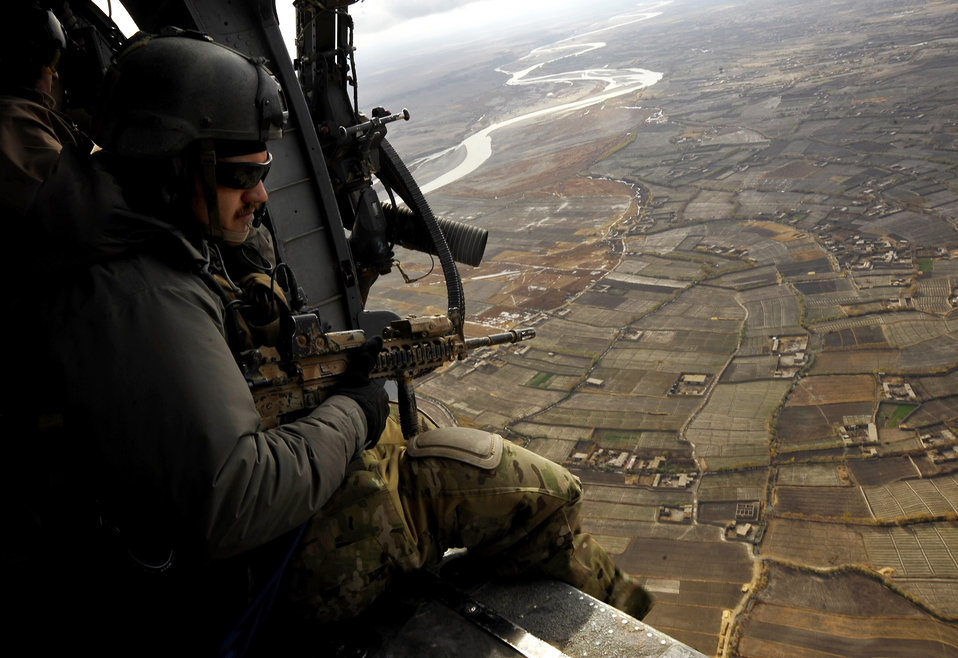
Pararescueman provides area security

A U.S. Air Force Pararescueman from the 66th Expeditionary Rescue Squadron stationed at Davis-Monthan AFB, Ariz., deployed to Camp Bastion, Afghanistan, provides area security while another HH-60 Pave Hawk is picking up a patient, Dec. 8, 2009. The members of the 66th ERQS can respond to medical evacuations in less than seven minutes to pick up patients in need of care.